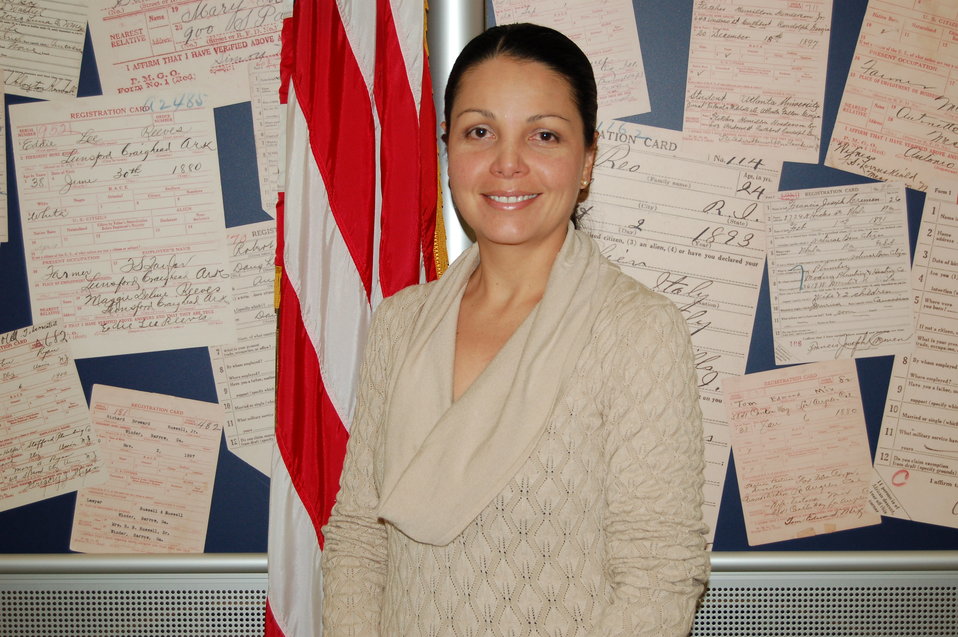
New Citizens